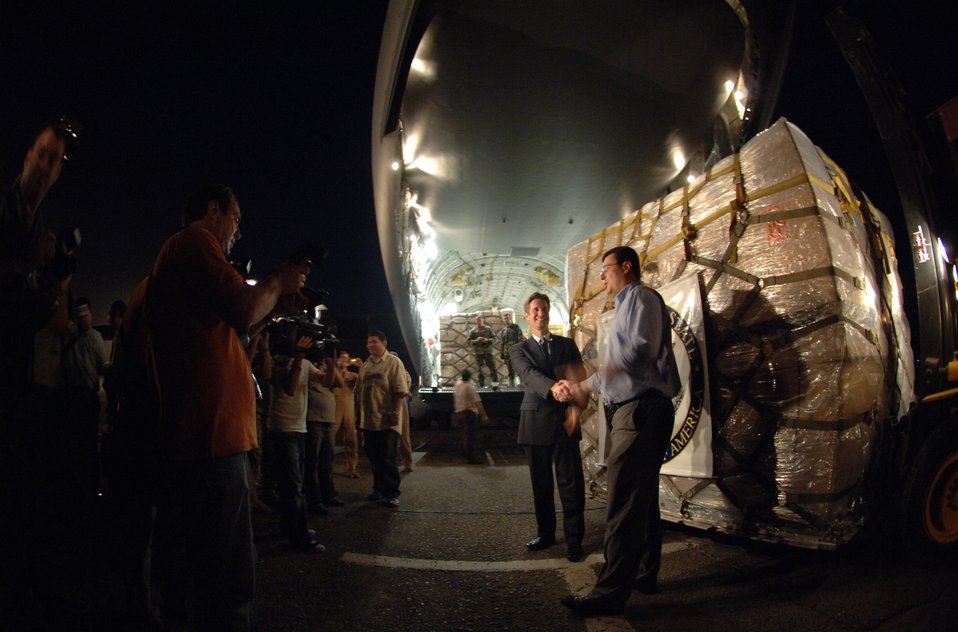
U.S. military provides humanitarian aid to Georgia

International press photograph U.S. State Department special envoy Matthew Bryza and a Georgian official who greeted the delivery of 16 pallets, containing $1 million in U.S. donated life support equipment and medical supplies for the people of the Republic of Georgia. The delivery was a joint-service effort between U.S Army Europe Soldiers and Airmen representing U.S. Air Forces in Europe and Air Mobility Command.